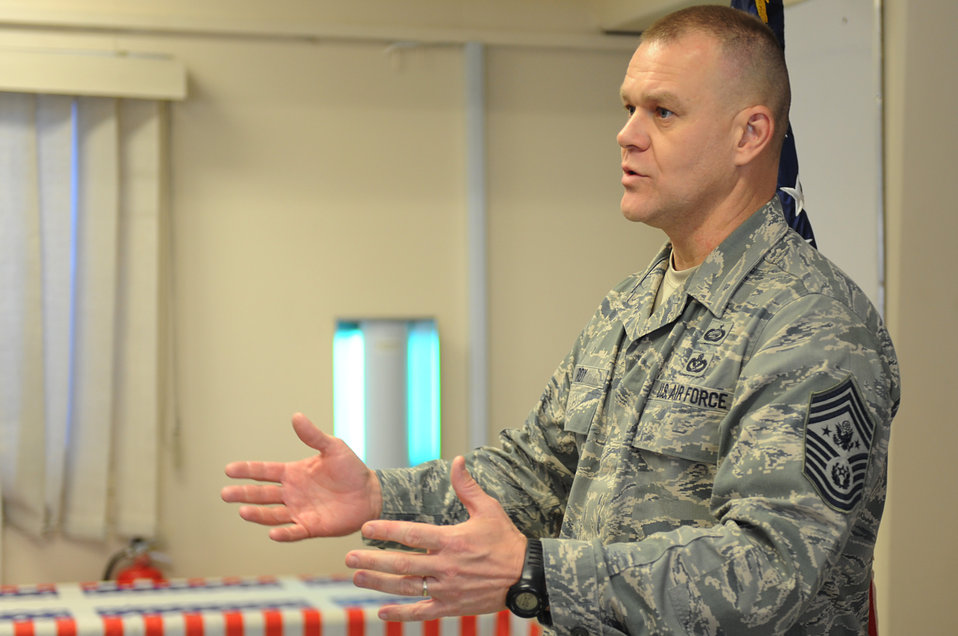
Thanksgiving Day visit

Chief Master Sgt. of the Air Force James A. Roy visits with Airmen at Camp Eggers, Afghanistan, Nov. 26, 2009. Chief Roy and Air Force Chief of Staff Gen. Norton Schwartz joined deployed Airmen assigned to the NATO Training Mission - Afghanistan and Combined Air Power Transition Force for Thanksgiving.